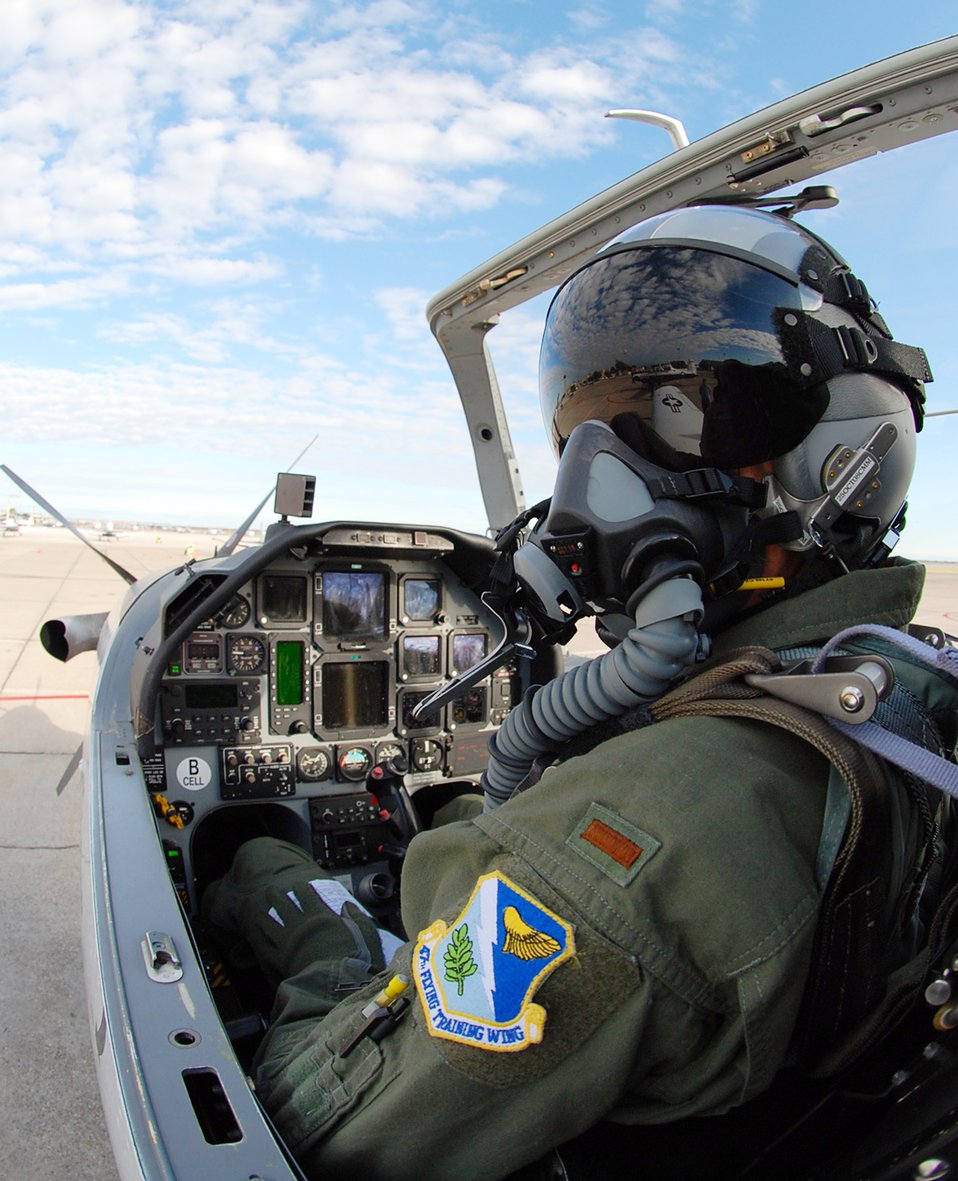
Check, check and re-check

Student pilot 2nd Lt. Richard McCann preflights his T-6 Texan II before starting the engine on the Laughlin Air Force Base, Texas, flightline Oct. 16, 2009. The instructor pilot in the back seat ensures the student performs checklists and safety procedures down to the smallest detail to ensure a safe training flight.